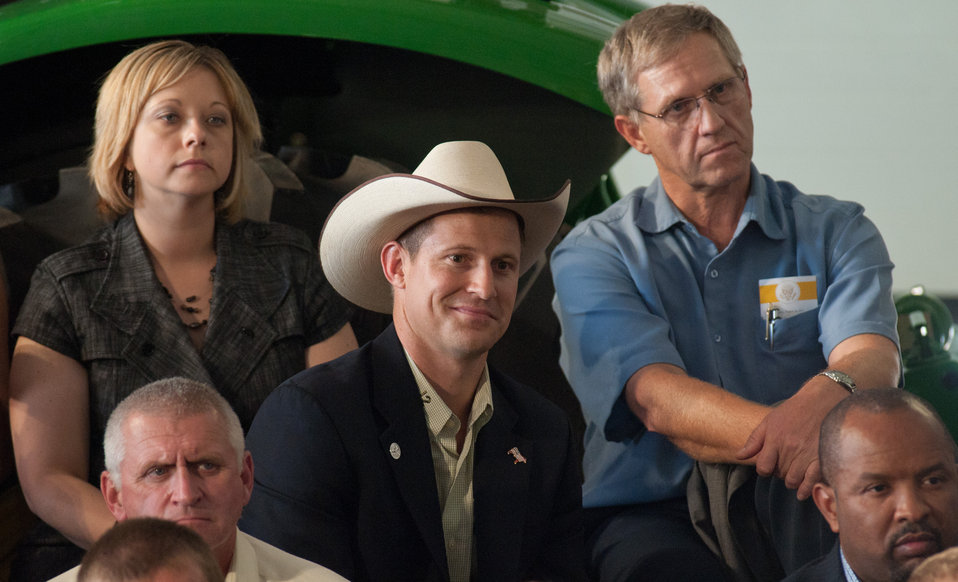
Members of the audience listen to President Barack Obama speaking at the Northeast Iowa Community College, for a White House Rural Economic Forum on Tuesday, August 16, 2011. The President’s visit will focus on agriculture’s contribution to the national economy, and how to create more jobs in rural America.